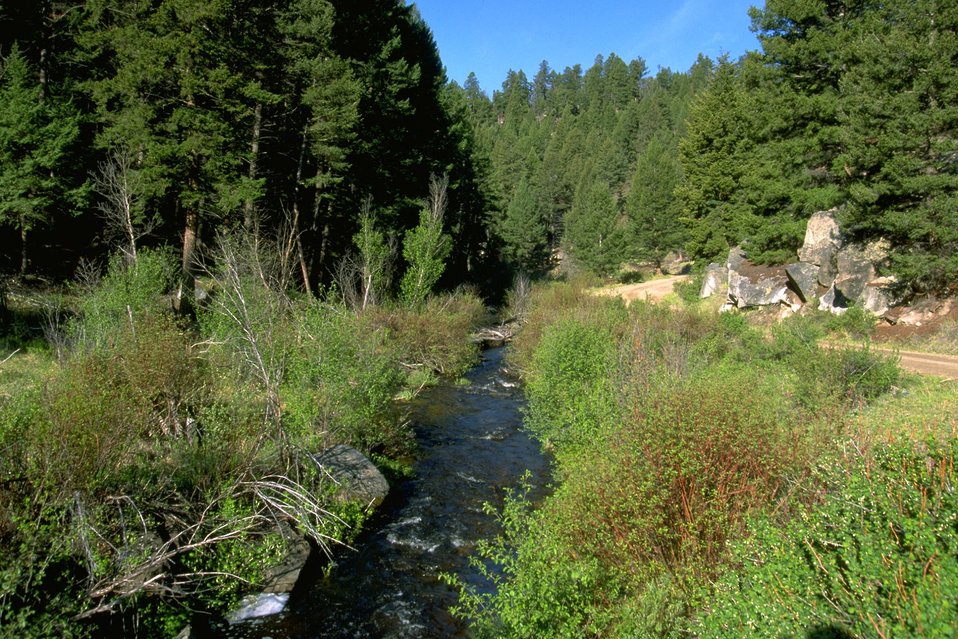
Moose Creek